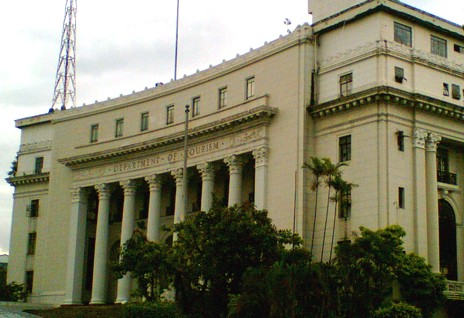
Facade of the Dept. of Tourism bldg.